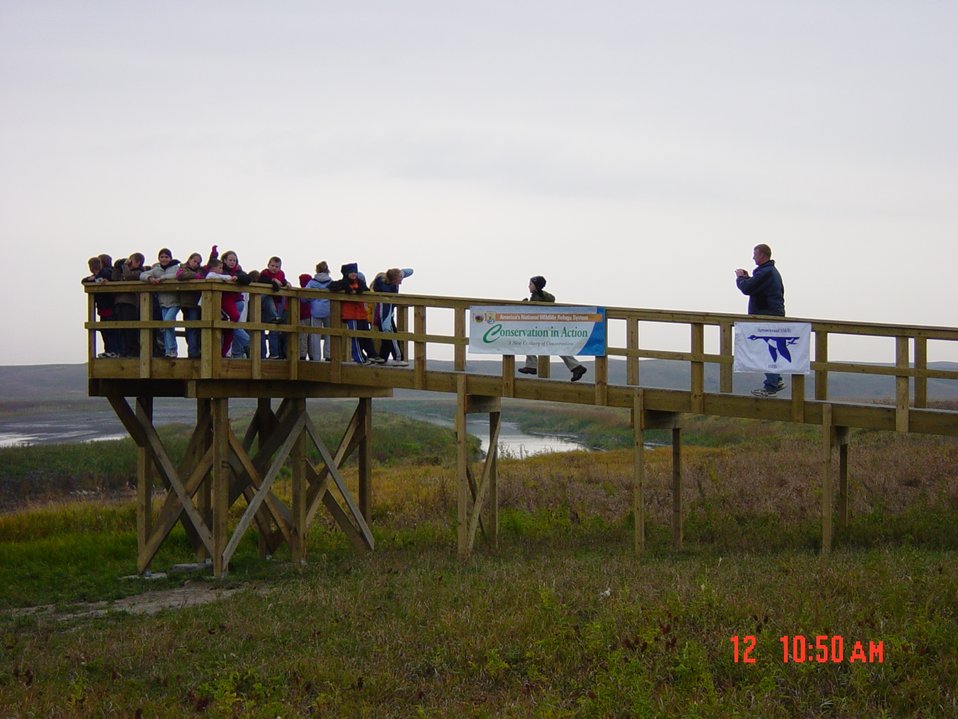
Wetlands Observation Deck

A 3rd grade class from Carrington, North Dakota attends the dedication of a new wetlands observation deck at Arrowwood National Wildlife Refuge in North Dakota.